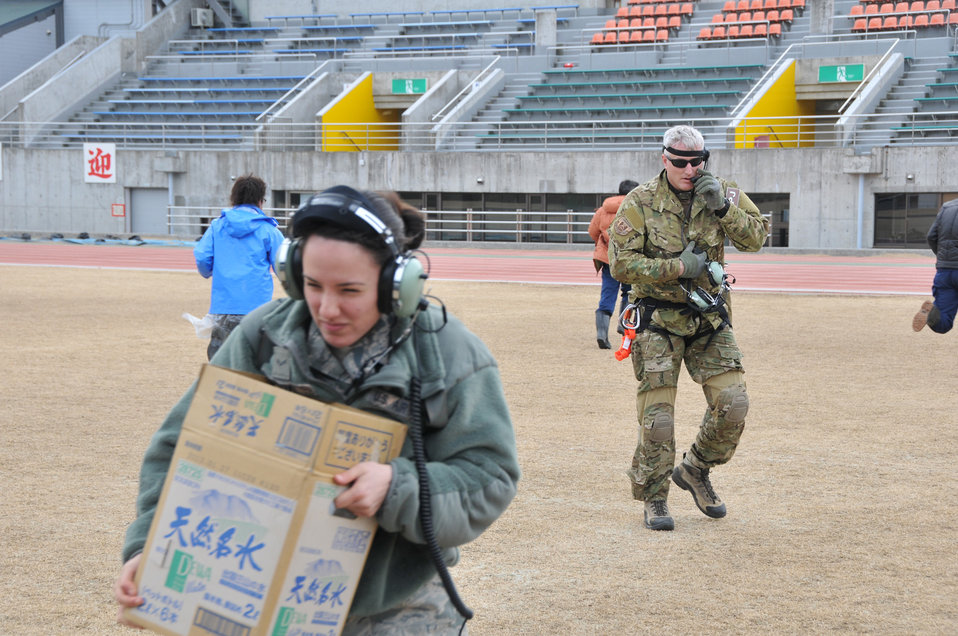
Search and rescue

Airman 1st Class Veronica Cox loads relief supplies onto an HH-60G Pave Hawk helicopter March 14, 2011, at Sendai, Japan. Airman Cox was part of a search and rescue team surveying the earthquake stricken area of Northeastern Japan.